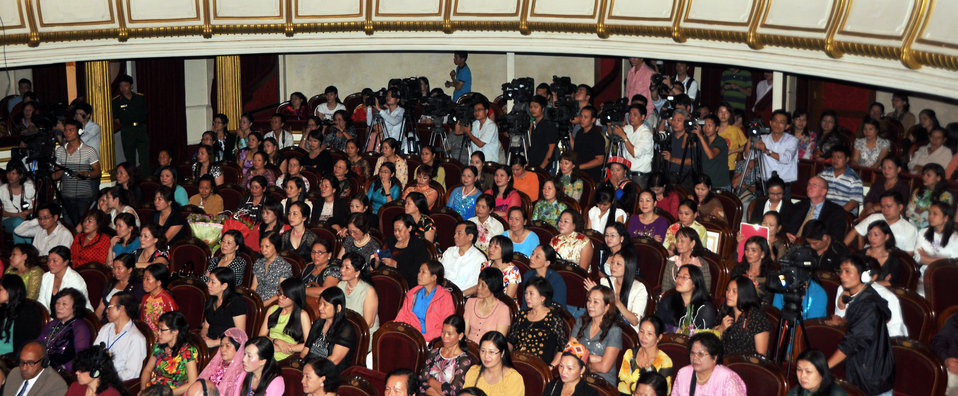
Vietnam Women Innovation Day 2013

Hanoi, October 2, 2013.